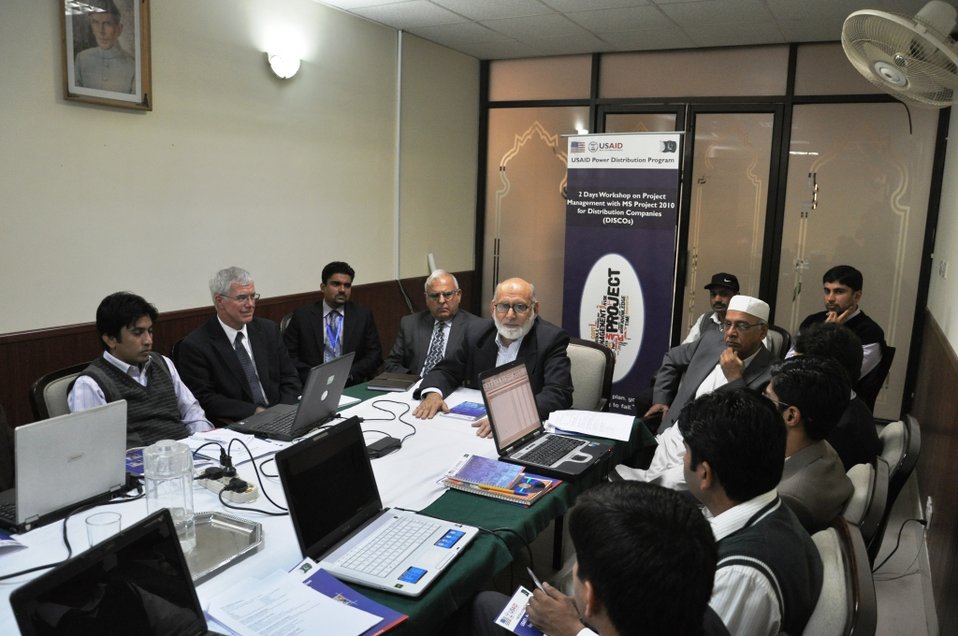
Project Management training at IESCO

Islamabad, November 28, 2011 - A 2-day workshop on 'Project Management with MS Project-2010' was organized at the IESCO Head Quarters for the DISCO's project directors, managers and engineers enabling them to understand the best practices in the field of Project Management. The prime focus was on the application of MS Project 2010, after which the participants can plan, manage and control their ongoing and upcoming projects in a more efficient manner.